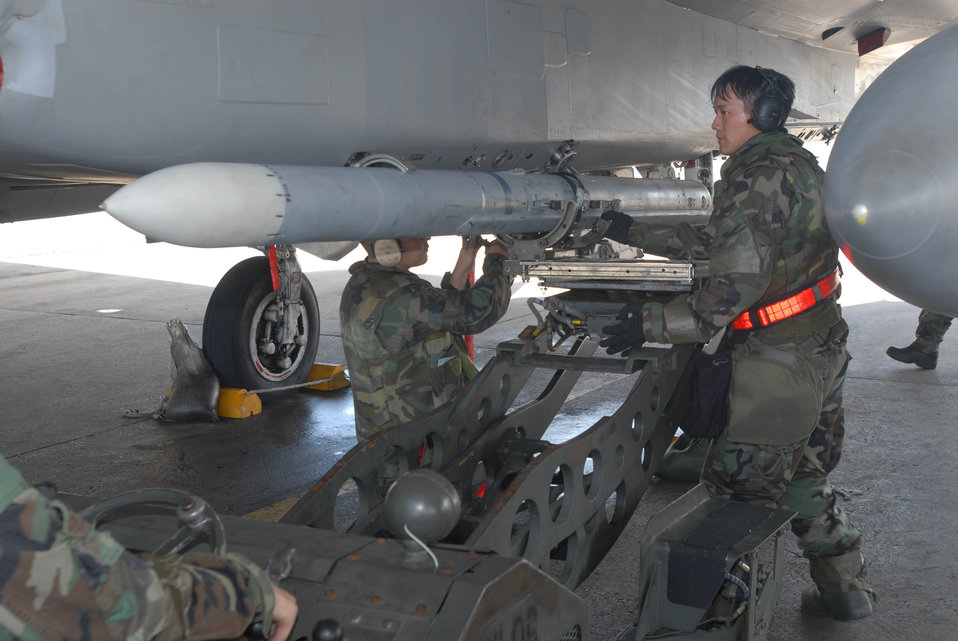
Weapon-loading warriors

Staff Sgt. Fong Vang loads an AIM-120 air-to-air missile on an F-15 Eagle during an combat capability exercise Oct. 18 at Kadena Air Base, Japan. The 18th Wing exercise from Oct. 13 to 19 tested the wing's ability to respond to a wartime situation. Sergeant Vang is assigned to the 18th Aircraft Maintenance Squadron.